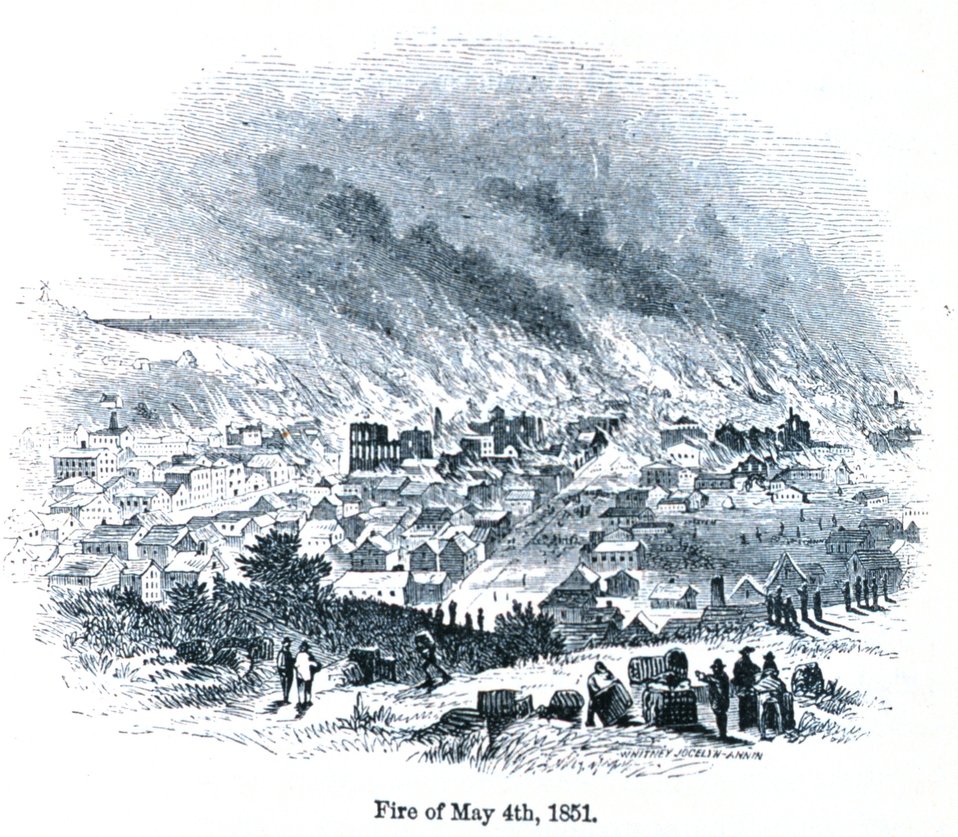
The San Francisco fire of May 4th, 1850. In: 'The Annals of San Francisco'. Frank Soule, John Gihon, and James Nesbit. 1855. Page 330. D. Appleton & Company, New York. F869.S3.S7 1855.